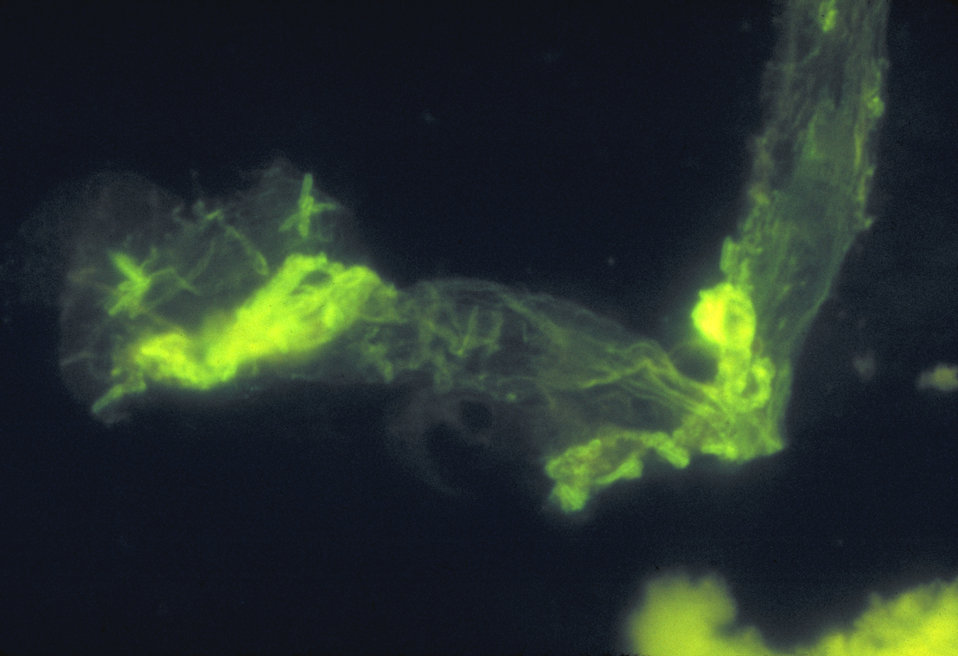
Positive indirect FA test for Legionella pneumophila.